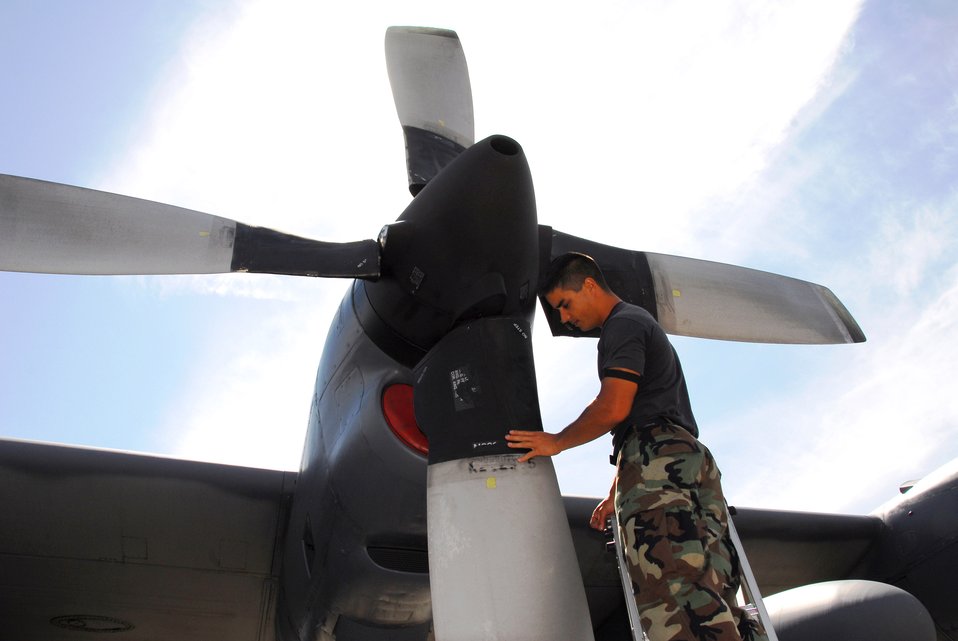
AFSOC scores safety trifecta

Staff Sgt. Nathan Roden inspects the propeller on an MC-130H Combat Talon II of the 15th Special Operations Squadron March 26 at Hurlburt Field, Fla. Air Force Special Operations Command dominated the 2006 Air Force safety award program, garnering the service's top awards for best major command safety record, most effective MAJCOM-level flight safety program, and best ground safety program. Sergeant Roden is a jet engine mechanic with the 1st Special Operations Aircraft Maintenance Squadron.